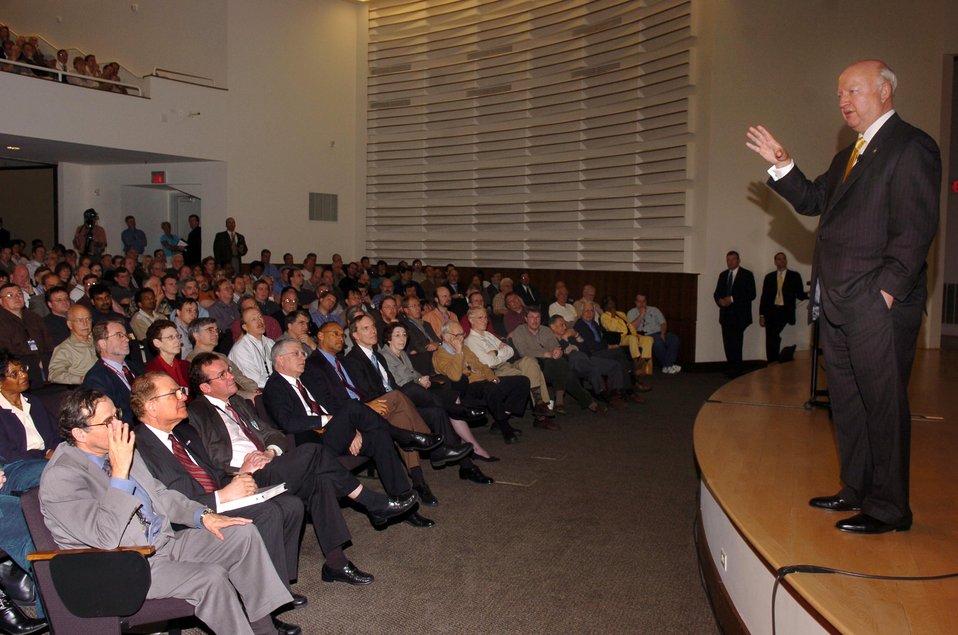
SECRETARY OF ENERGY SAMUEL W. BODMAN ADDRESSES ARGONNE NATIONAL LABORATORY STAFF, MAY 6, 2005.

ON MAY 6, 2005 SECRETARY BODMAN PARTICIPATED IN THE DEDICATION CEREMONY FOR THE CENTER FOR NANOSCALE MATERIALS AT ARGONNE NATIONAL LABORATORY. HE POINTED OUT THAT THE WORK AT THE CNM WILL IMPACT THE FIELDS OF ENERGY, MEDICINE, INFORMATION, AND HOMELAND SECURITY. THE BASIC NANOSCALE RESEARCH CONDUCTED AT THE CENTER WILL LEAD TO MANY INDUSTRIAL AND COMMERCIAL APPLICATIONS.